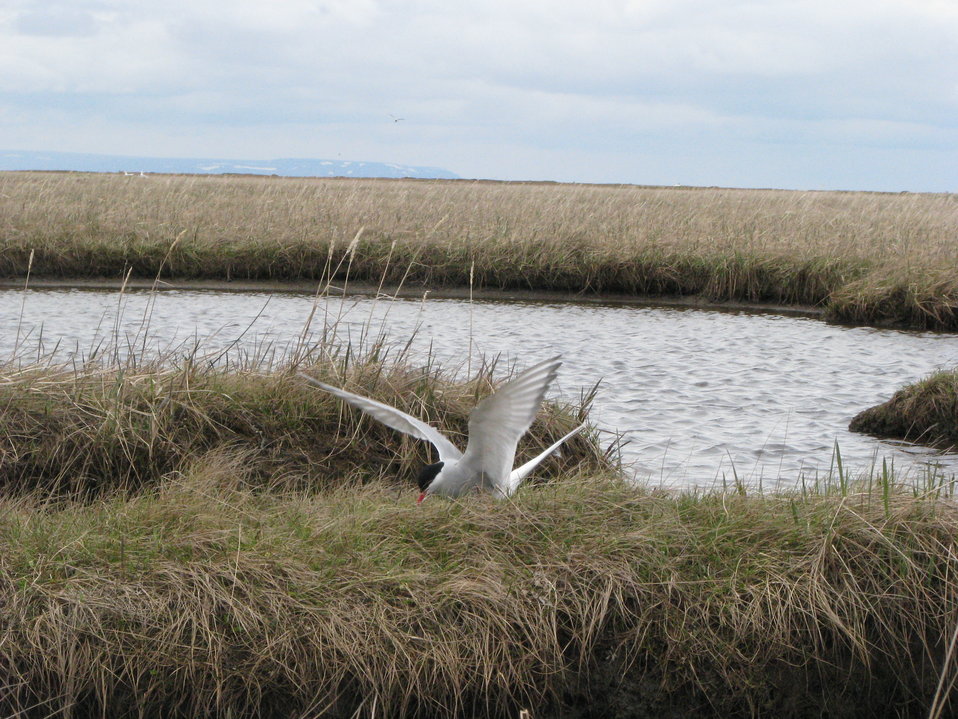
Arctic Tern returning to nest after a quick flight

Yukon Delta NWR